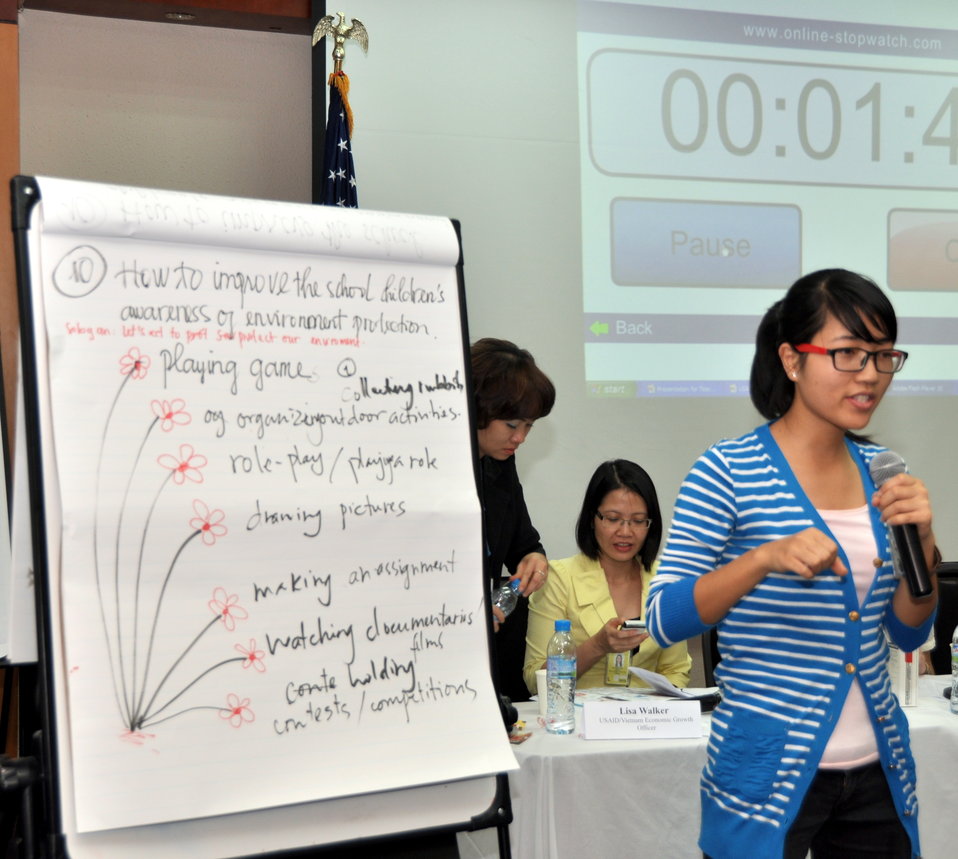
Students join the ‘USAID and Higher Education in Vietnam’ talk

Photo: @USAIDVietnam, November 19, 2012